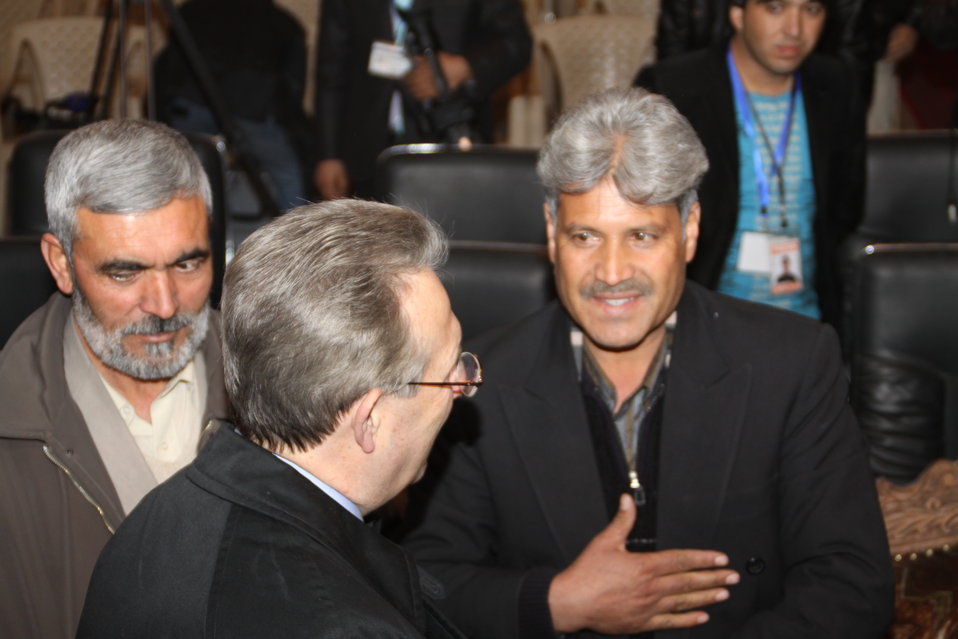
U.S. Ambassador E. Anthony Wayne